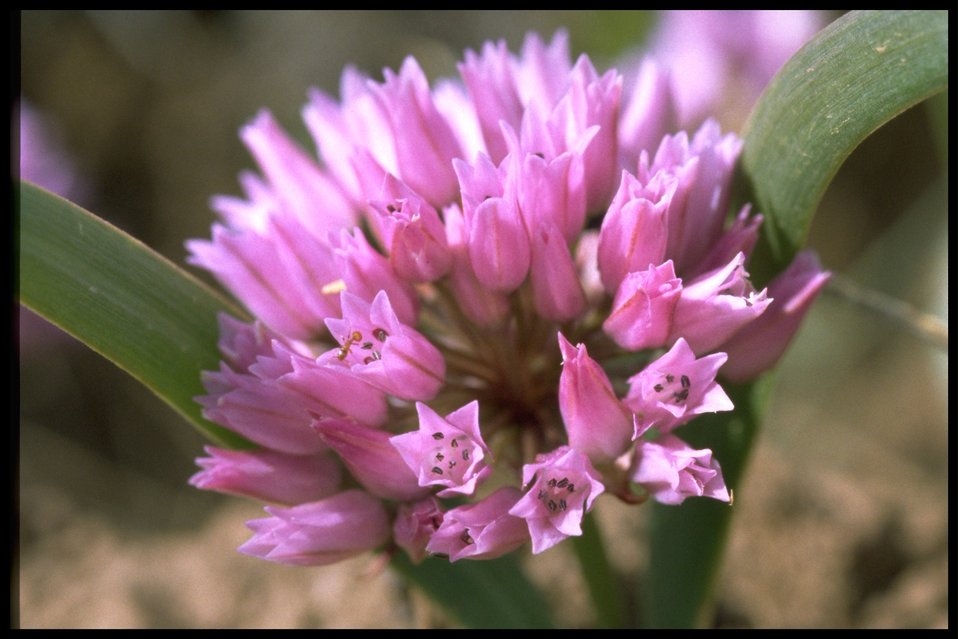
Closeup shot of Tolmie's onion.